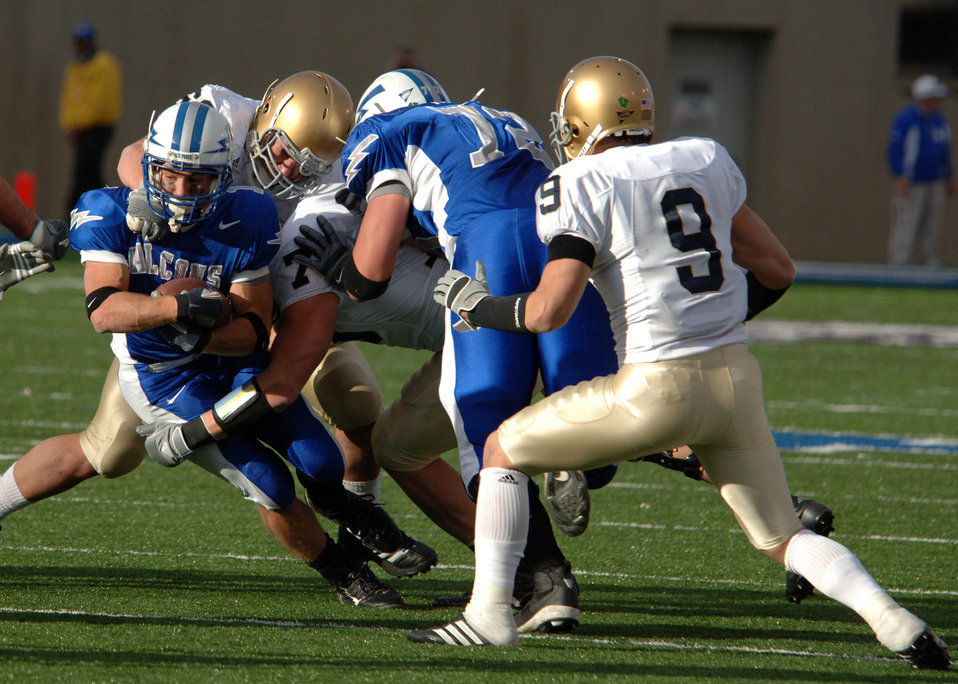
Falcon First Down

Air Force halfback Chad Hall fights his way for a Falcon first down Saturday against 8th-ranked Notre Dame. Hall let the Falcons in rushing with 72 yards, but the explosive Irish offense proved too much for Air Force. Notre Dame won, 39-17.